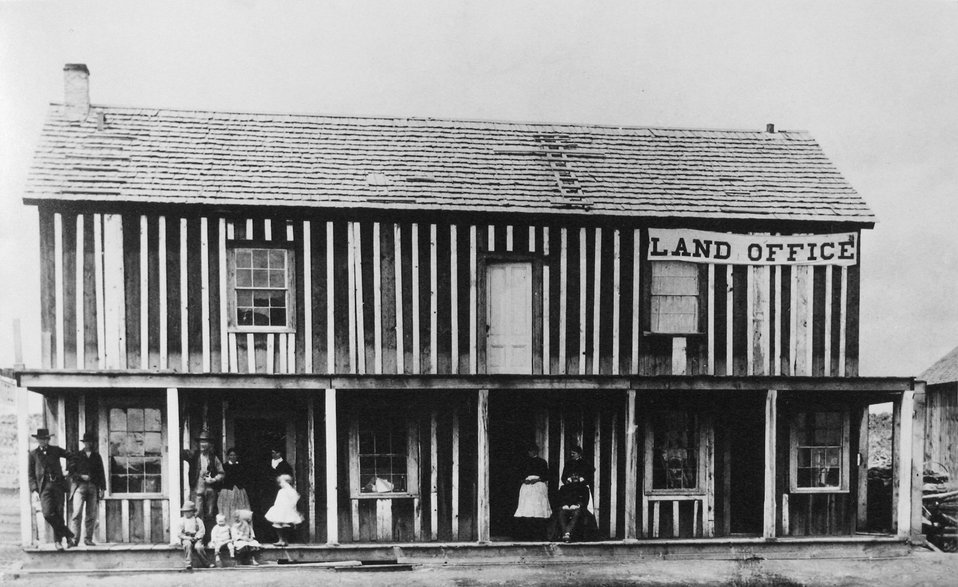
GLO Oregon, Harney District Land Office in Burns, Oregon. Authorized in June 1, 1989 and opened on September 2, 1989. Closed in 1924. circa 1980